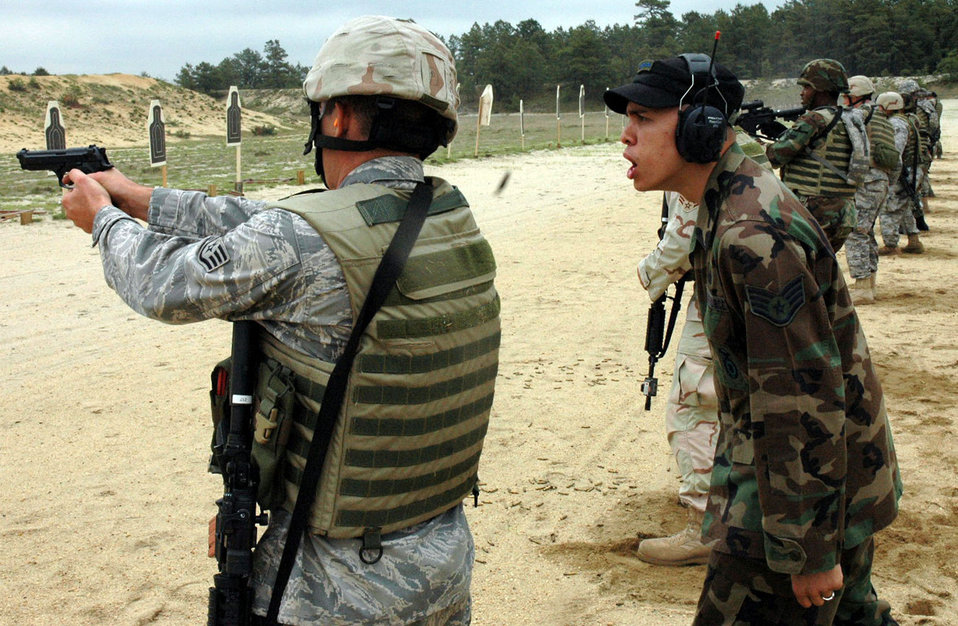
U.S. Air Force Expeditionary Center: Phoenix Warrior Training Course

Staff Sgt. Brian Arrington watches students in the Air Force Phoenix Warrior Training Course practice live-fire combat rifle training June 5 at Fort Dix, N.J. The course prepares security forces Airmen for upcoming deployments. Sergeant Arrington is an instructor from the U.S. Air Force Expeditionary Center's 421st Combat Training Squadron.